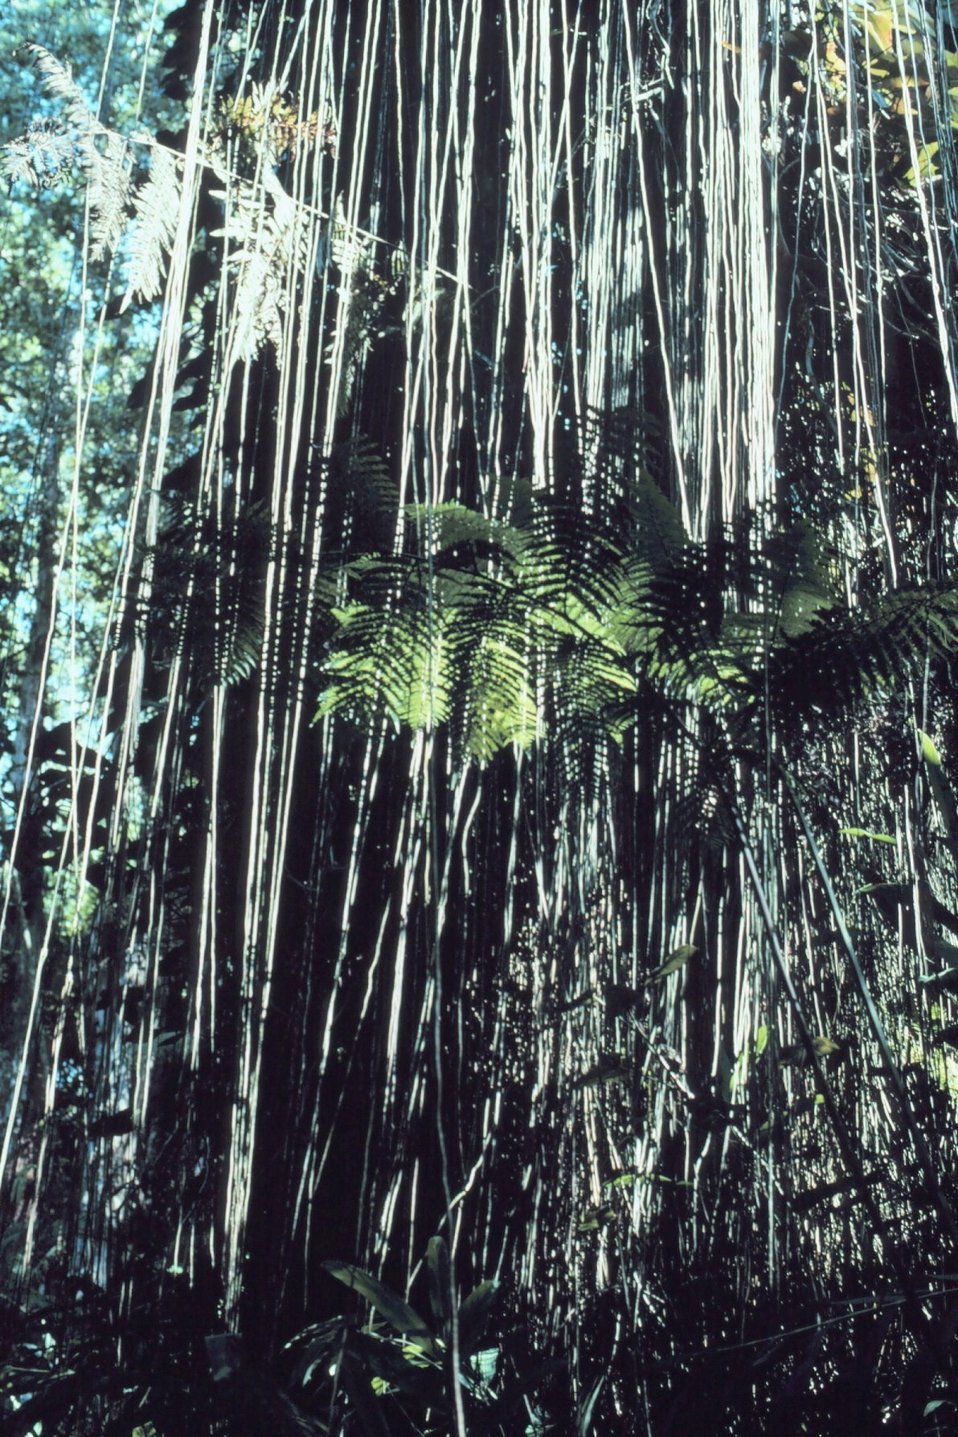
Jungle vines on the edge of the trail to Akaka Falls